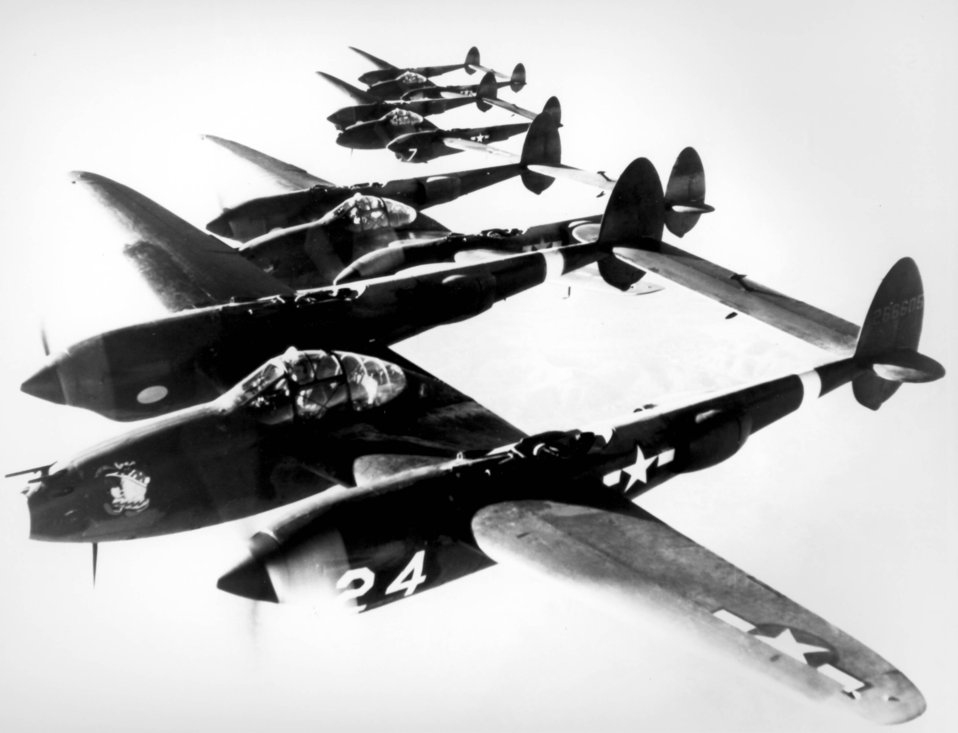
P-38 Lightning

1940's -- The P-38 was used extensively as a long-range escort fighter and saw action in practically every major combat area of the world. A very versatile aircraft, the Lightning was also used for dive bombing, level bombing, ground strafing and photo reconnaissance missions.